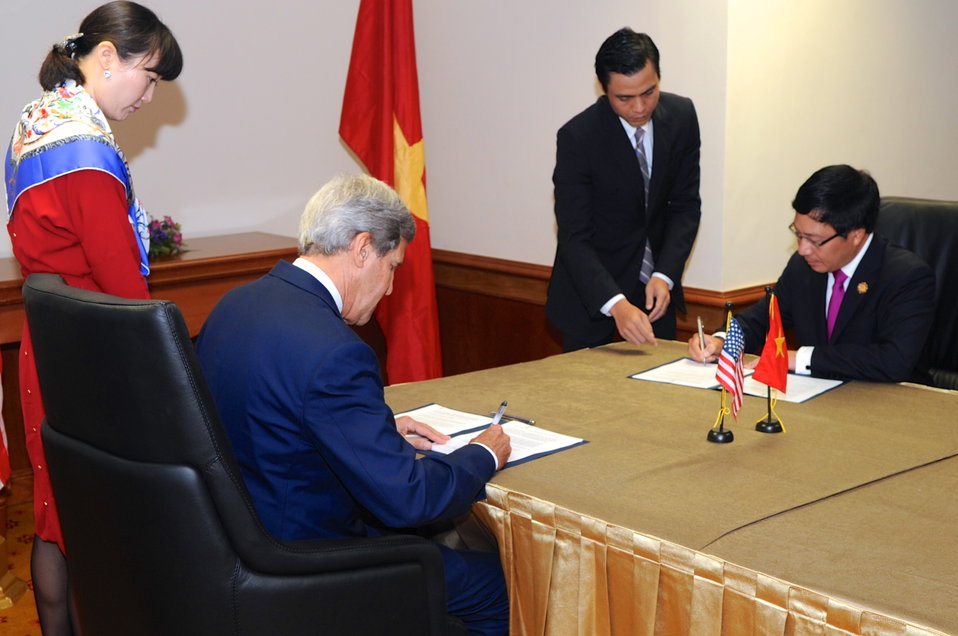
Secretary Kerry, Vietnamese Foreign Minister Minh Sign Agreement

U.S. Secretary of State John Kerry and Vietnamese Foreign Minister Pháº¡m Bình Minh sign a nuclear fuel agreement at the margins of the ASEAN Summit in Bandar Seri Begawan, Brunei, on October 10, 2013.